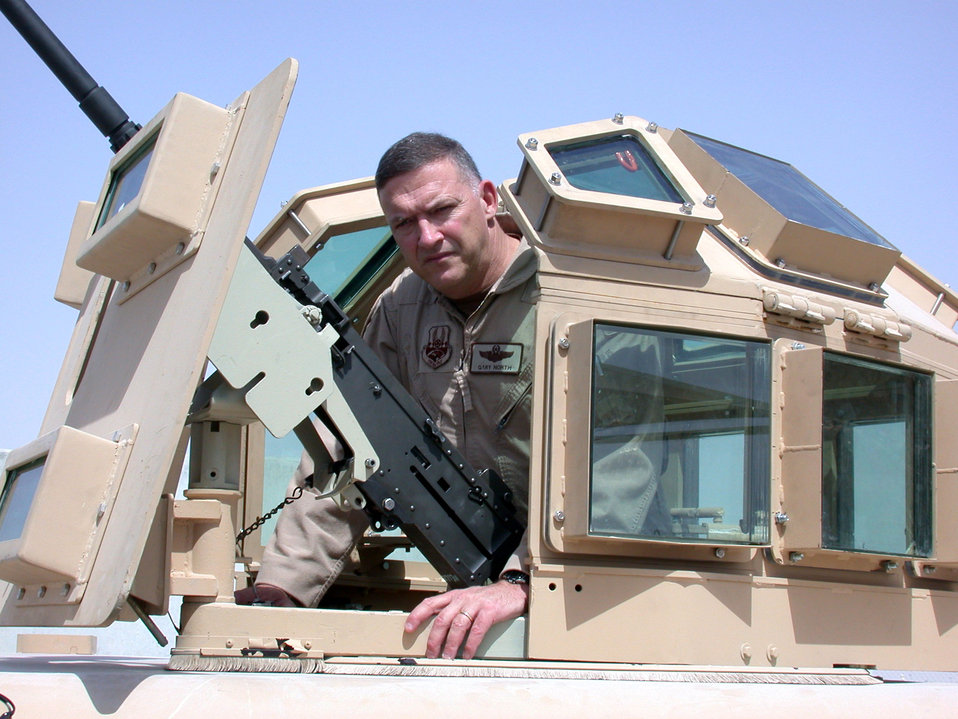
Life-saving turret prototype stems from Airman's death

Lt. Gen. Gary North, U.S. Central Command Air Forces commander, gets a first-hand look at an improved protective turret prototype developed by the USCENTAF force protection staff in concert with the Air Force Security Forces Force Protection Battlelab. The prototype's development and testing, in less than 80 days, stemmed from the death of Airman 1st Class Leebernard Chavis, who was killed by sniper fire in October 2006.